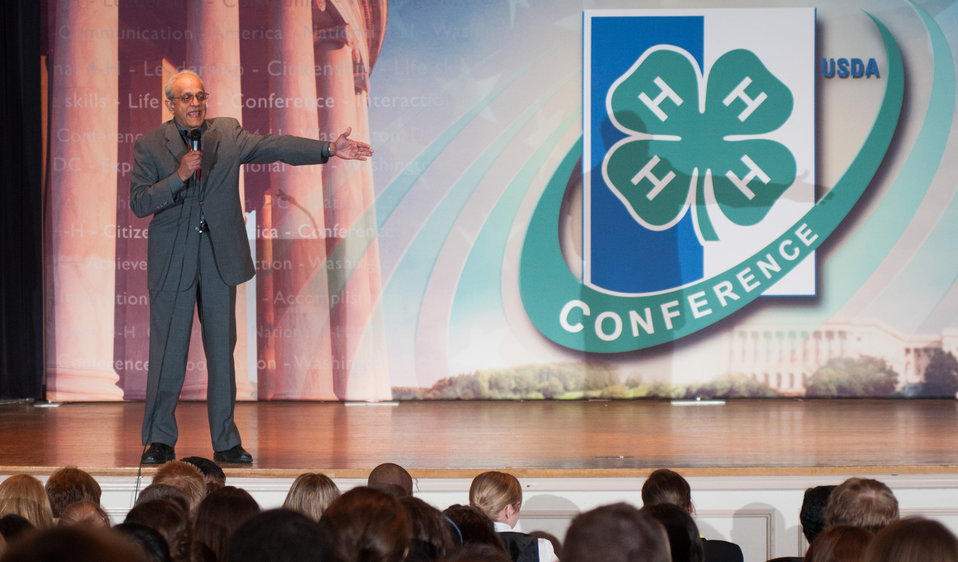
U.S. Department of Agriculture (USDA National Institute of Food and Agriculture Director Dr. Sonny Ramaswamy opened his address about to approximately 300 4-H youth members of the 2013 National 4-H Conference, with a challenge question: “What is the most daunting challenge facing humanity?” The resulting address lead to information about educational opportunities. He closed with a quote from philosopher Confucius: “Find a job you love and you will never have to work again.” on Monday, April 8, 2013 in Chevy Chase, MD. The youth delegates are in grades 10-12 (15-19 years old). The purpose of the conference is to 1) engage 4-H youth in personal development experiences that will increase knowledge, resources, and skills; 2) discuss topics affecting youth and 4-H programming nationwide; and 3) empower and mobilize 4-H youth to create positive social change in their communities in a meaningful and genuine way. The conference also reinforces the rich history of 4-H and its valuable tie to USDA, Cooperative Extension and the Land-Grant University System.